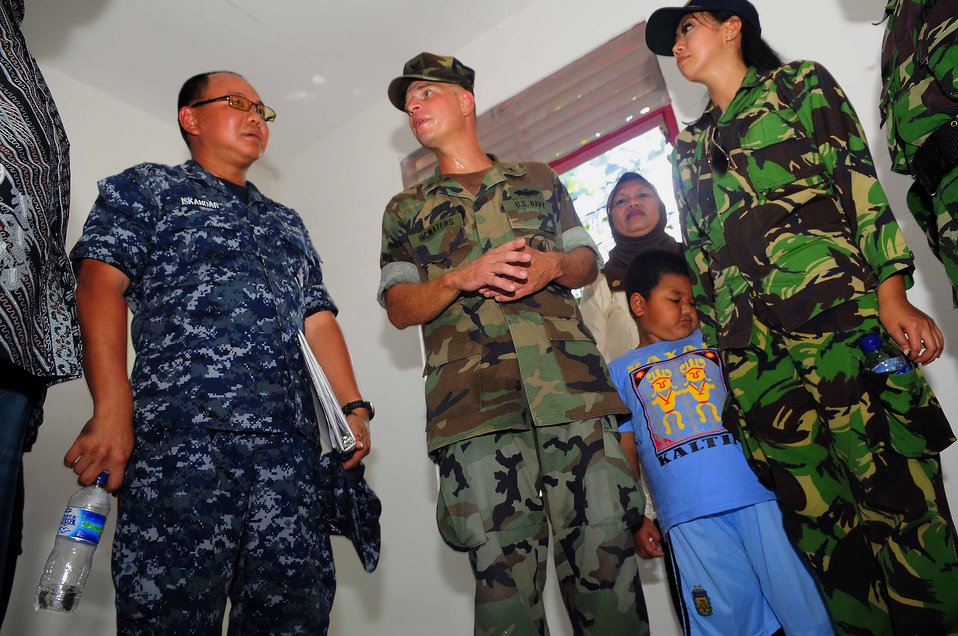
Builder 2nd Class McWaters Gives a Tour

Builder 2nd Class Jason McWaters, center, gives a tour of an engineering civic action program in Ternate, Indonesia, on July 23, 2010. Pacific Partnership 2010 is the fifth in a series of annual U.S. Pacific Fleet endeavors conducted in Indonesia as a disaster relief exercise aimed at strengthening regional partnerships.